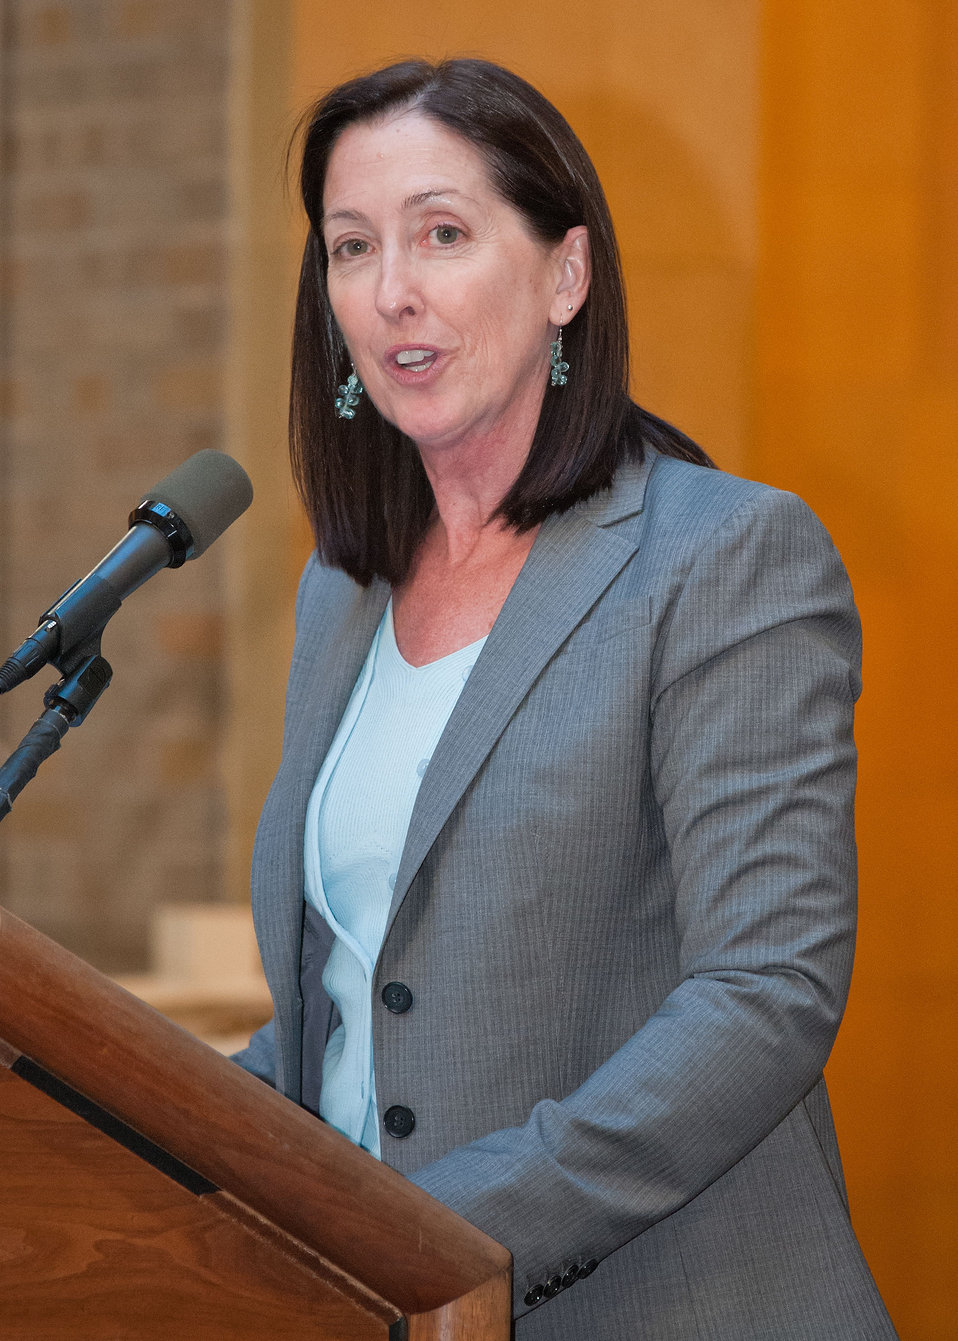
Mary Wagner, Associate Chief, U.S. Forest Service introduced the speakers at the Chimney Rock National Monument Dedication Celebration held at the United States Department of Agriculture in Washington, D.C., on Monday, Sept. 24, 2012. President Barack Obama designated Chimney Rock in the San Juan National Forest in Southwest Colorado as a national monument Friday, Sept. 21, 2012. A move that will help preserve 4,726 acres in southwestern Colorado surrounded by the Southern Ute Indian Reservation. The land will be managed by the U.S. Department of Agriculture Forest Service with assistance from local tribes. The site is deeply spiritual to the Pueblo people and other tribes. Chimney Rock was home to the Pueblo People 1,000 years ago and is culturally significant for Native American tribes.